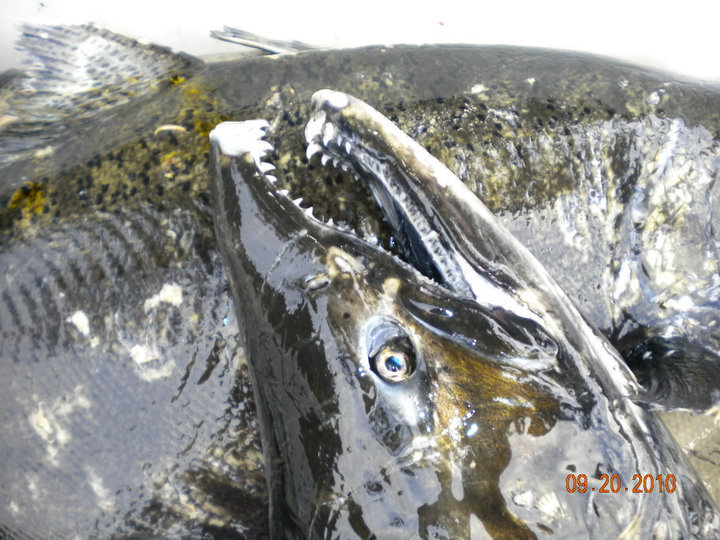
Close-up of Fall Tule Chinook - Spring Creek NFH